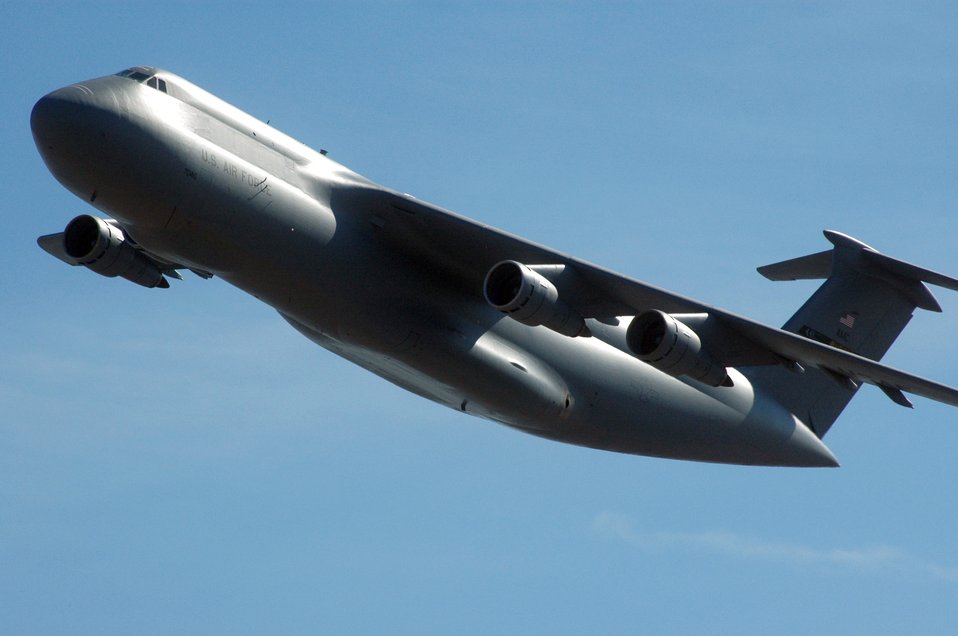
Streamlining maintenance operations

The Warner Robins Air Logistics Center at Robins Air Force Base, Ga., received the 2006 Franz Edelman Award for Achievement in Operations Research on Monday, May 1, 2006, for its use of operations research to streamline maintenance procedures for the C-5 Galaxy. Using innovative management processes, the time required to repair and overhaul the C-5 was reduced 33 percent.